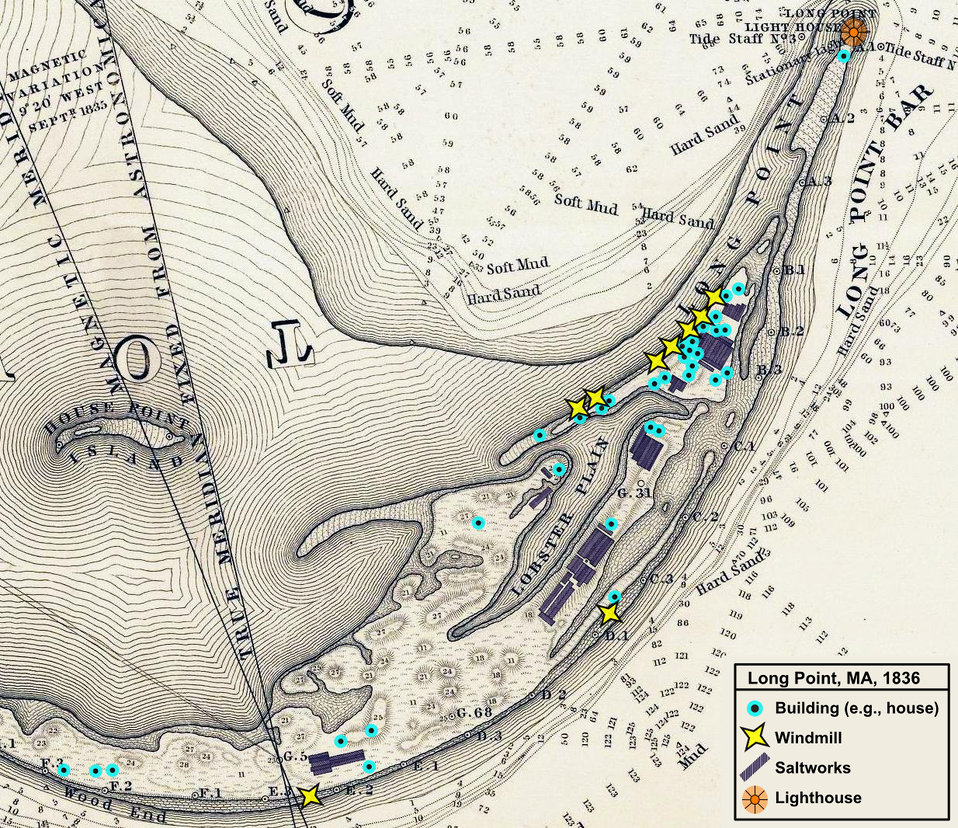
Village of Long Point, Provincetown, 1836. Extracted from 'A Map Of The Extremity Of Cape Cod Including the Townships of Provincetown & Truro: A Chart Of Their Sea Coast And Of Cape Cod Harbour, State of Massachusetts' Excerpt focused to Long Point, Provincetown. Shows 9 windmills, 34 buildings, and several saltworks. Legend notation: 'Wind mills for working salt pumps are represented thus: x' 'Salt works for making salt by evaporating sea water are represented thus' [shows long, hatched rectangles] Executed under the direction of Major J.D. Graham U.S. Top. Engs. During portions of the years 1833,'34, &'35 ... W.J. Stone Sc. Wash. Surveyed And Projected By J.D. Graham ... Drawn From The Original Projects And Notes, By J.E. Johnston ... A.A. Humphreys .... J.. Macomb ... W.R. Palmer ... Reduced from the original in the Bureau of U.S. Topographical Engineers, Washington, by Wash: Hood 1836. List No: 2433.005 Series No: 5 Engraver or Printer: Stone, W.J.; Hood, Washington; Graham, J.D.; Izard, J.F.; Lee, T.L.; Macomb, J.N.; Johnston, J.E.; Henderson, J.E.; Humphreys, A.A.; Palmer, W.R. Publication Author: Hood, Washington; Graham, Maj. J.D. Pub Date: 1836 Pub Reference: Guthorn p15. Orig. Obj Height cm: 147 Orig. Obj Width cm: 179 Orig. Scale 1:10,560 Call Number: G3762.C35 1835 .G7 Collection: David Rumsey Historical Map Collection